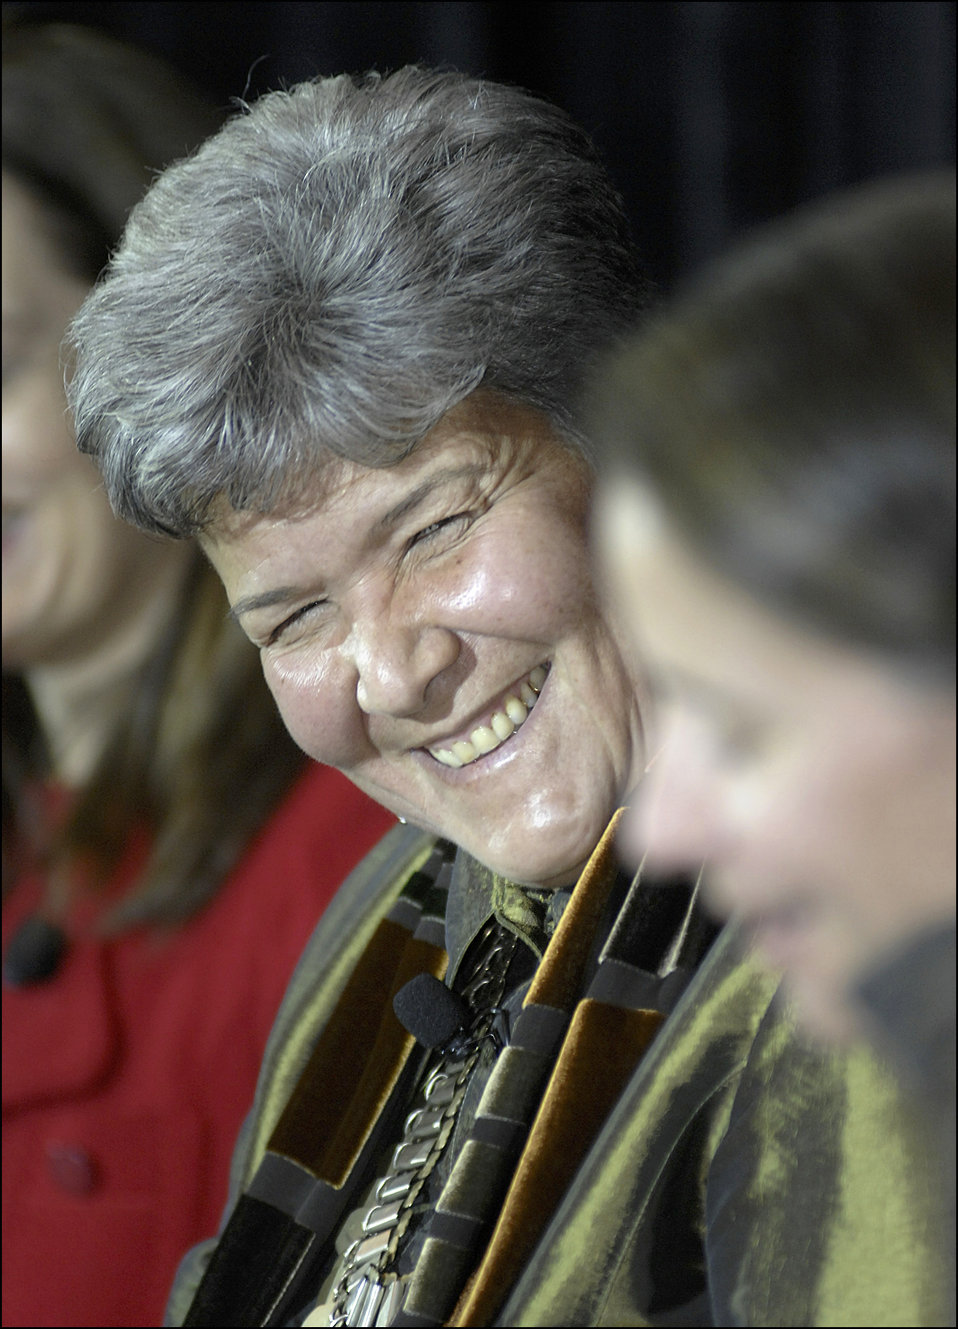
Inaugural Women in Finance Leadership Series, 10/19/10

Assistant Secretary for International Markets and Development Marisa Lago at the inaugural Women in Finance Leadership Series at Treasury.